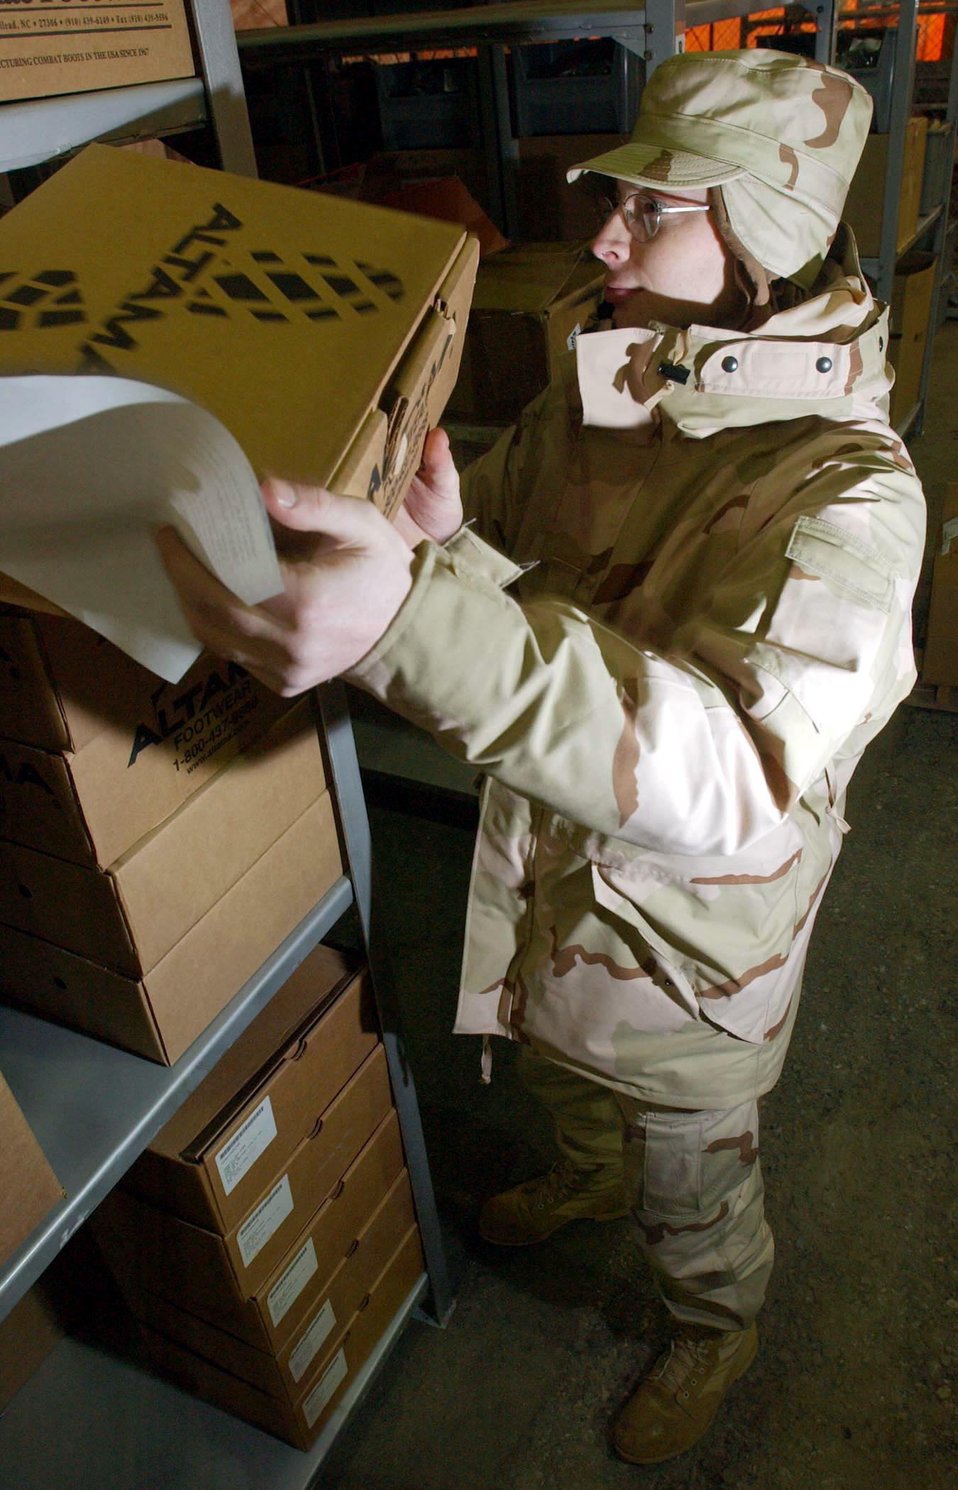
Extreme cold hitting deployed airmen

GANCI AIR BASE, Kyrgyzstan -- Staff Sgt. Bradley Youngquist stocks boots in the supply tent here. He is currently assigned to the 376th Expeditionary Logistics and Readiness Squadron and supporting Operation Enduring Freedom. Youngquist is deployed from Ramstein Air Base, Germany.